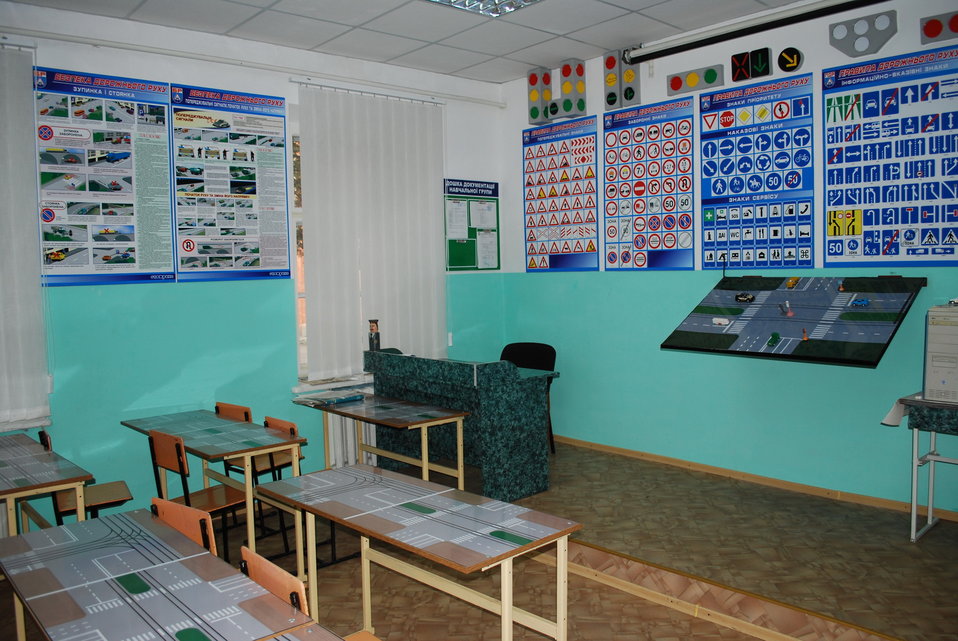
Українська: Класна кімната, м.Умань, Шевченка, 1